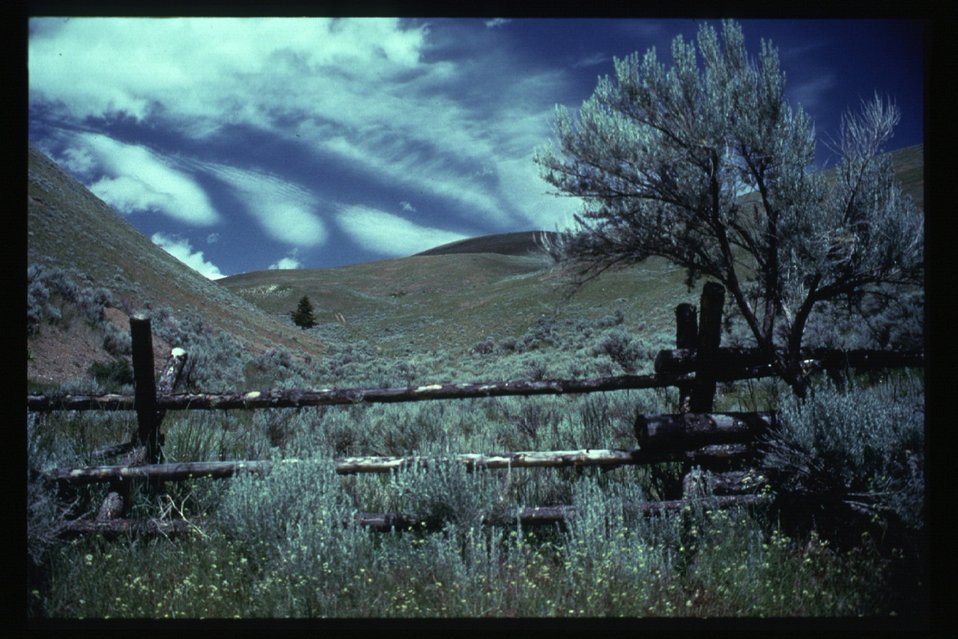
Lewis and Clark National Historic Trail Salmon Field Office UCSC Upper Columbia Salmon Clearwater